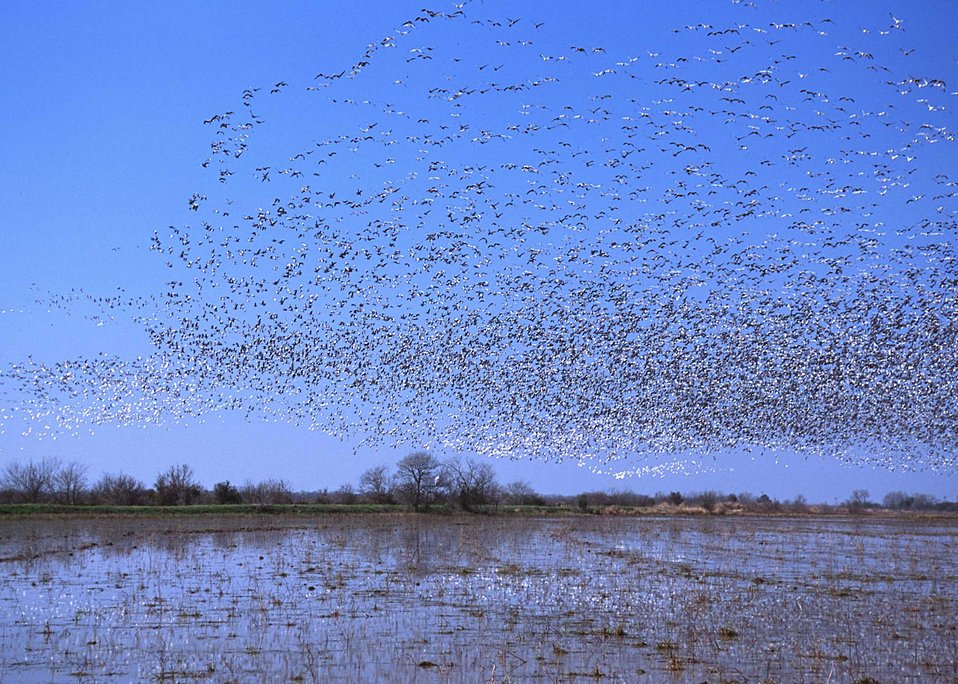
Flooded croplands near Gueydan, Louisiana attract thousands of geese in the winter.